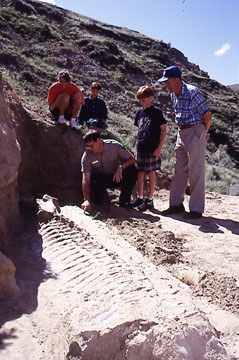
Environmental Education Fire Workshop Timberline High School Fall 2000